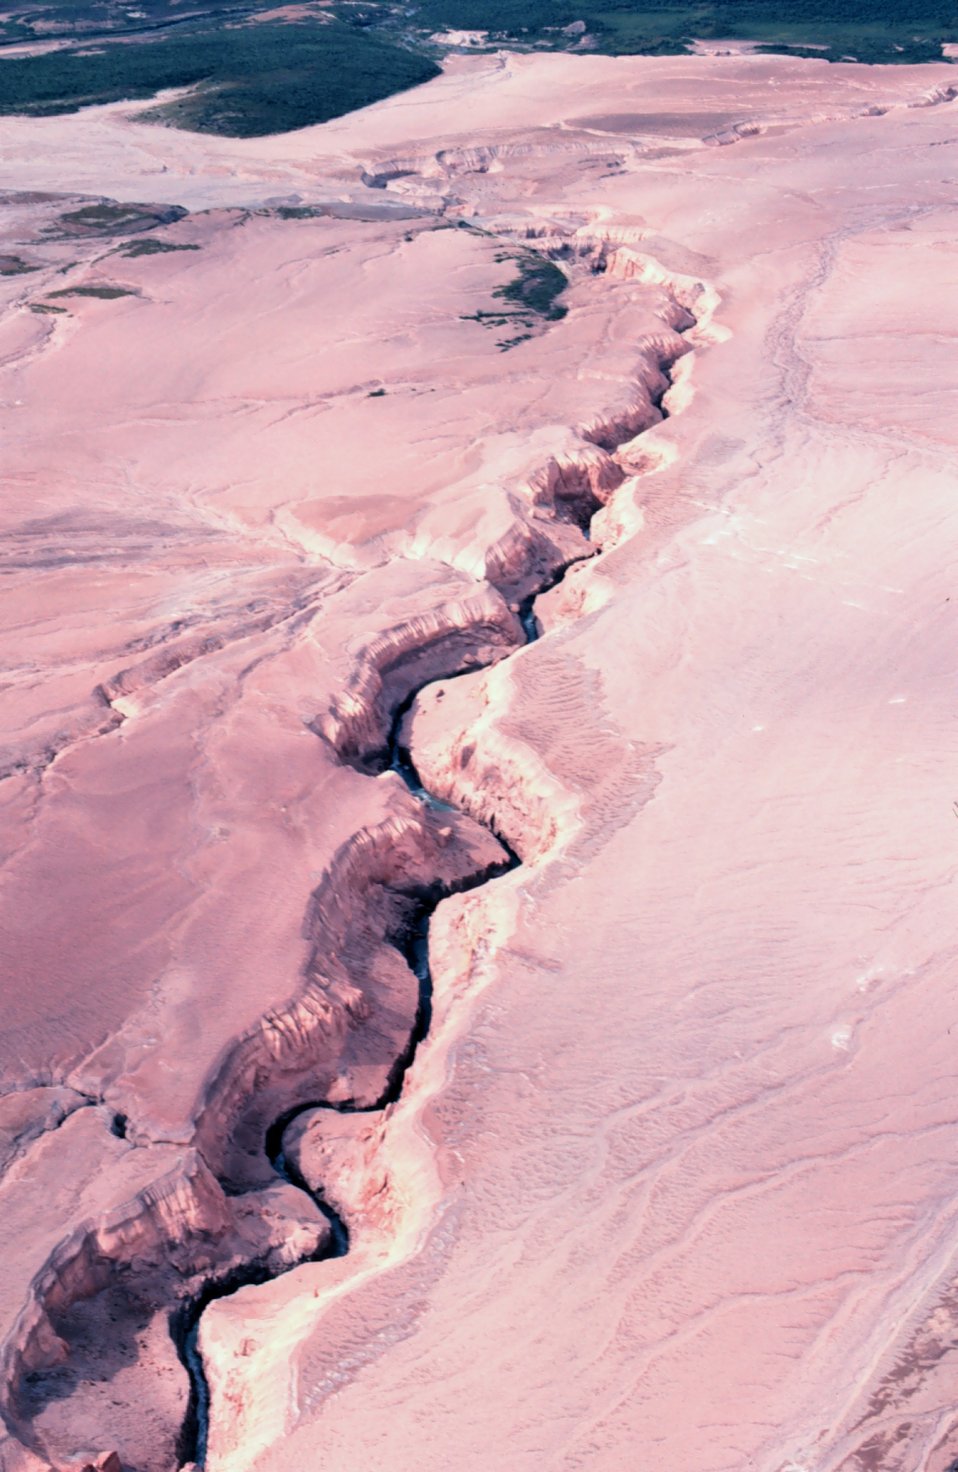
River eroding volcanic ash flow